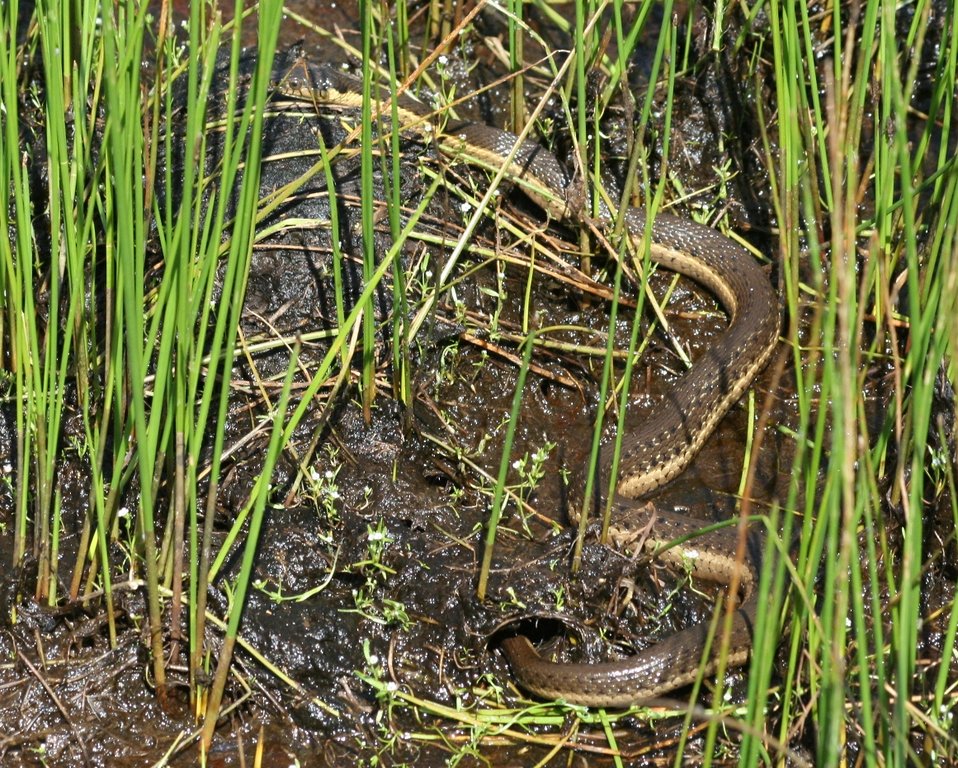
two striped garter snake

The two striped garter snake (thamnophis hammondii) is a medium sized snake measuring between 24-40 inches in length.

It is commonly found near water, including vernal pools. This photo was taken at the Santa Rosa Plateau Ecological Reserve, Riverside County, California.